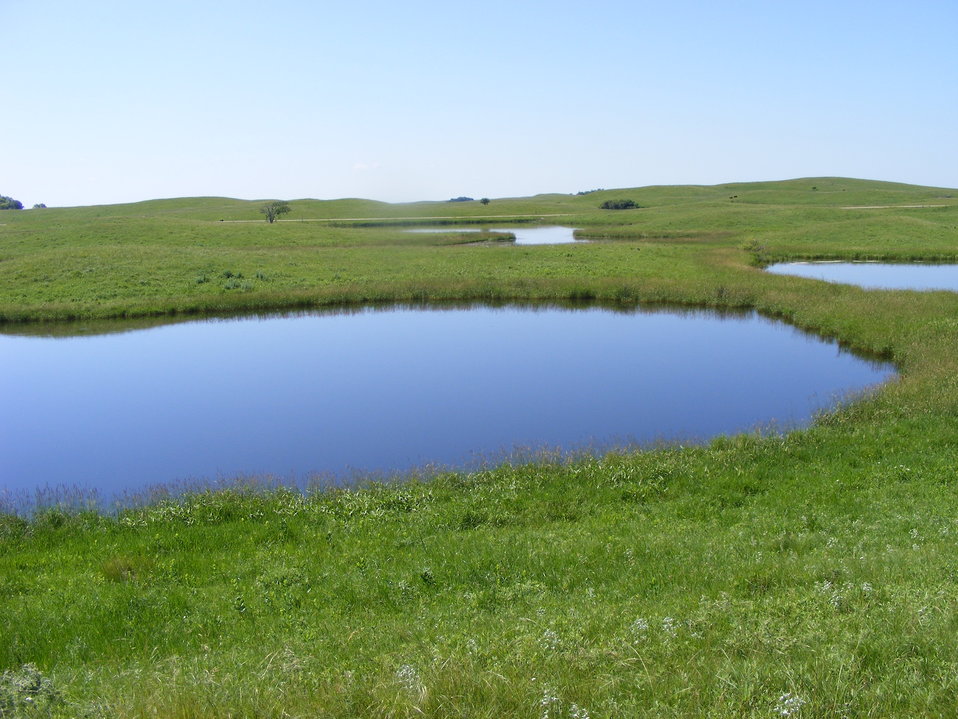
Prairie Jewels

On a rare calm day in South Dakota, the blue sky is reflected in prairie ponds on Lake Emma Waterfowl Production Area in Marshall Co., SD.